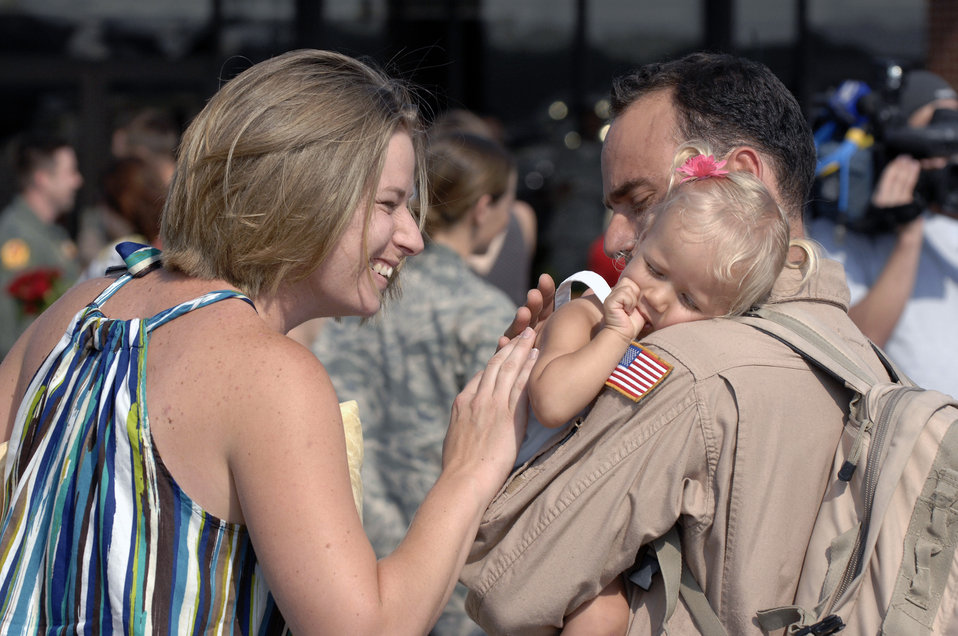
Mission complete: Charleston Airmen return home

Tech. Sgt. Augie Nalsen reunites with wife, Christina, and daughter, Cali, May 3 at Charleston Air Force Base, S.C. More than 140 Airmen from the 16th Airlift Squadron returned from their 120-day deployment to the Middle East supporting operations Enduring Freedom and Iraqi Freedom and operations in the Horn of Africa. While deployed, the 16th AS executed 142 airdrops that resupplied servicemembers serving in the regions with 3.7 million pounds of supplies. Sergeant Nalsen is a loadmaster for the 16th AS.